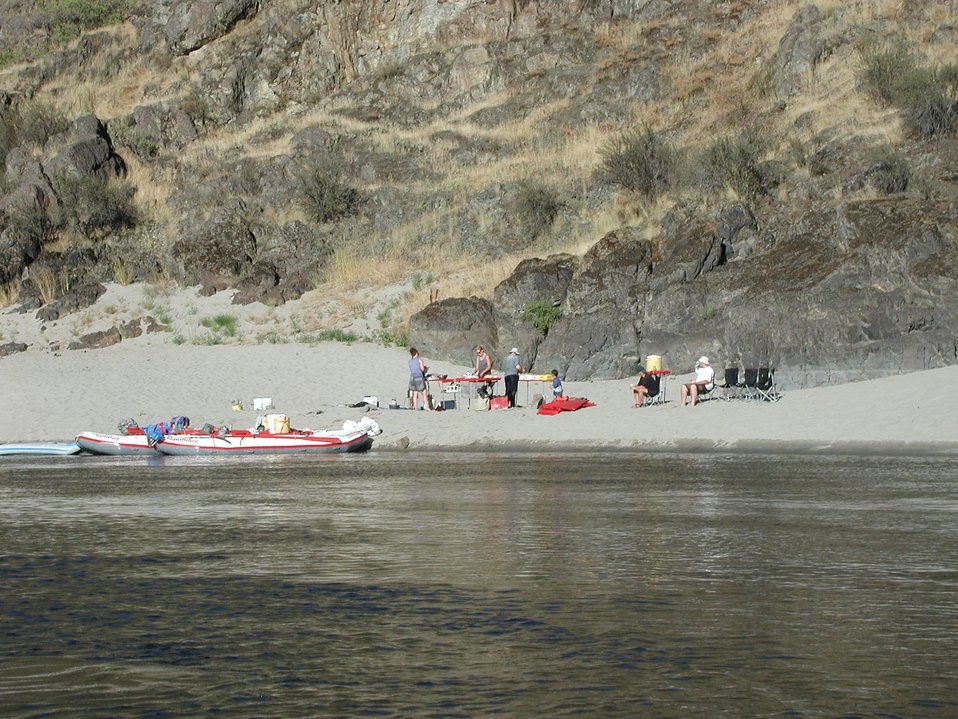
Recreation Rafting on Lower Salmon River Cottonwood Field Office UCSC Upper Columbia Salmon Clearwater District